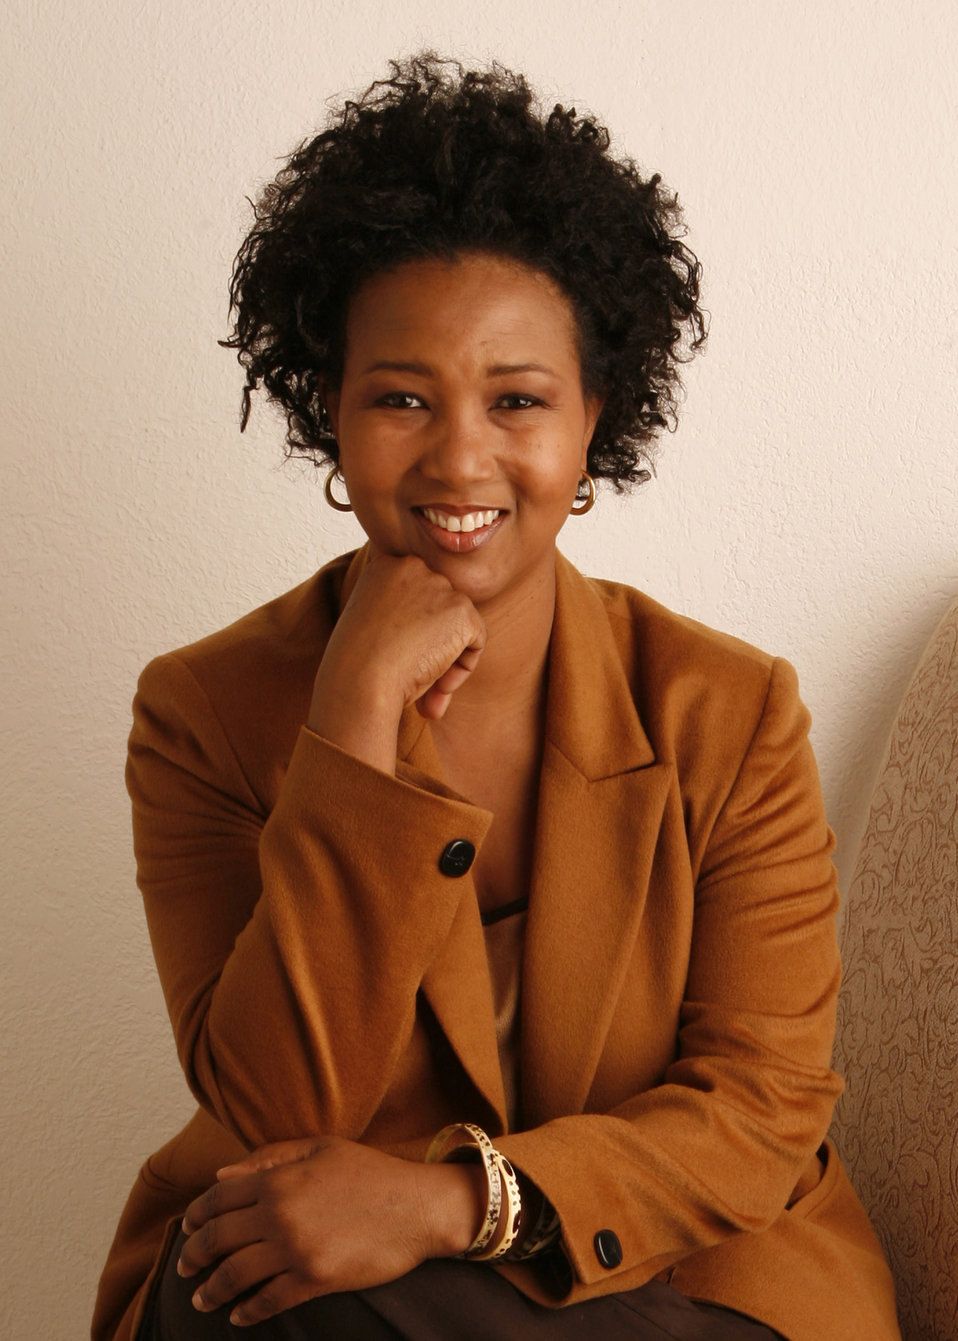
Dr. Mae Jemison was the first African-American woman to travel into space